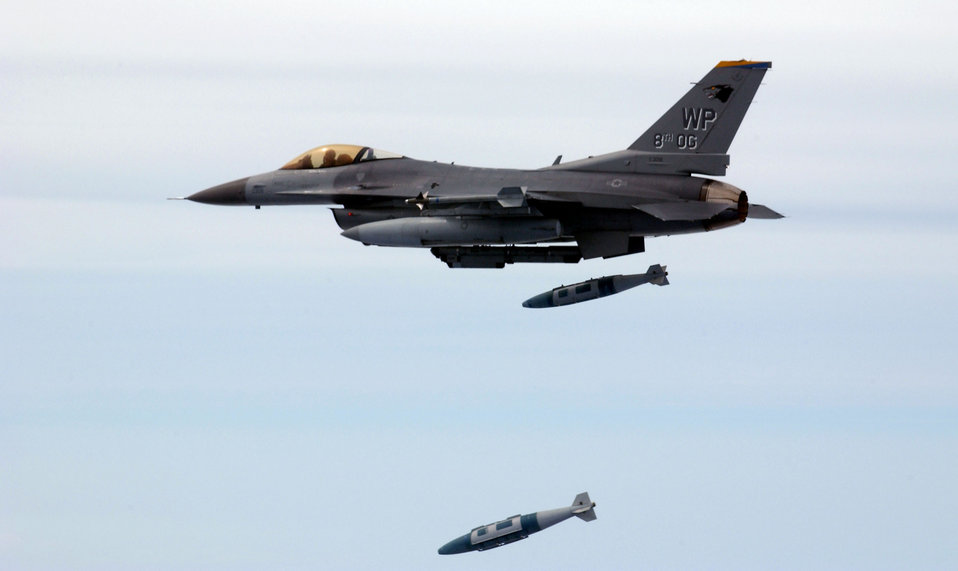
Wolf Pack attack

OVER CHIK-DO ISLAND, South Korea -- An F-16 Fighting Falcon dropped two joint direct attack munitions on the bombing range here during training July 2. The munitions were dropped by Lt. Col. Eric Schnitzer from the 80th Fighter Squadron at Kunsan Air Base, South Korea.